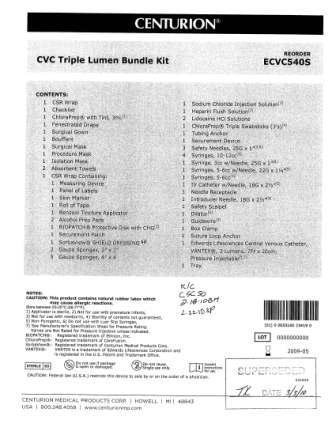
RECALLED - Convenience kits which contain bacteriostatic sodium chloride solution by American Regent

April 1, 2011 - Product Recall - Centurion Medical Products Initiates Voluntary Recall of Customized Convenience Kits (including select Central Venous Catheter, PICC Insertion, and VAD Trays) that contain American Regent’s Bacteriostatic Sodium Chloride Injection, USP, 0.9% 30 mL Multiple Dose Vials.